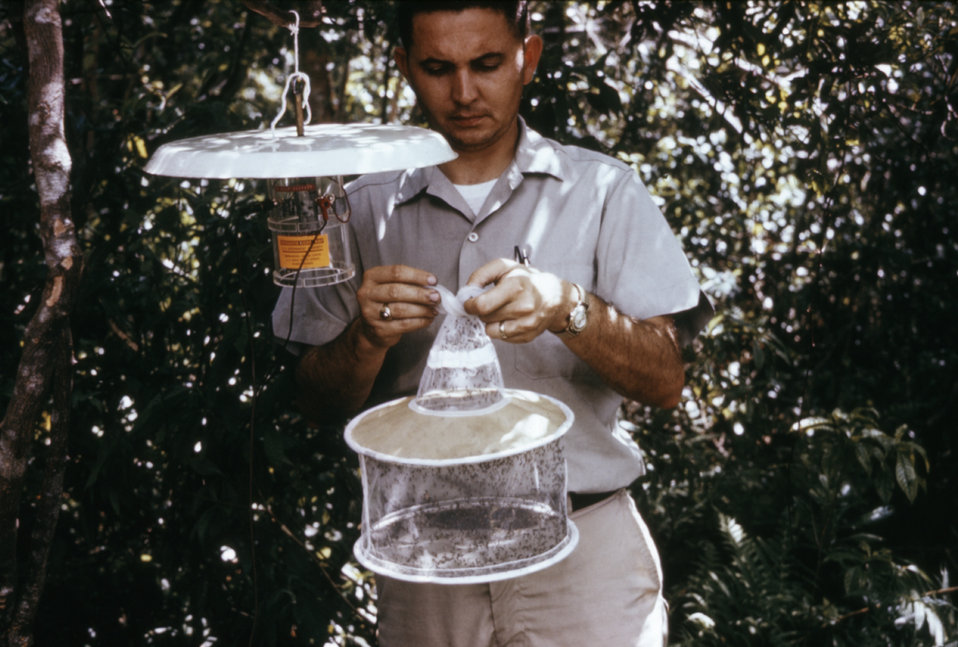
A CDC field researcher is shown detaching a collection bag from a CDC light trap, which has captured numerous mosquitoes.